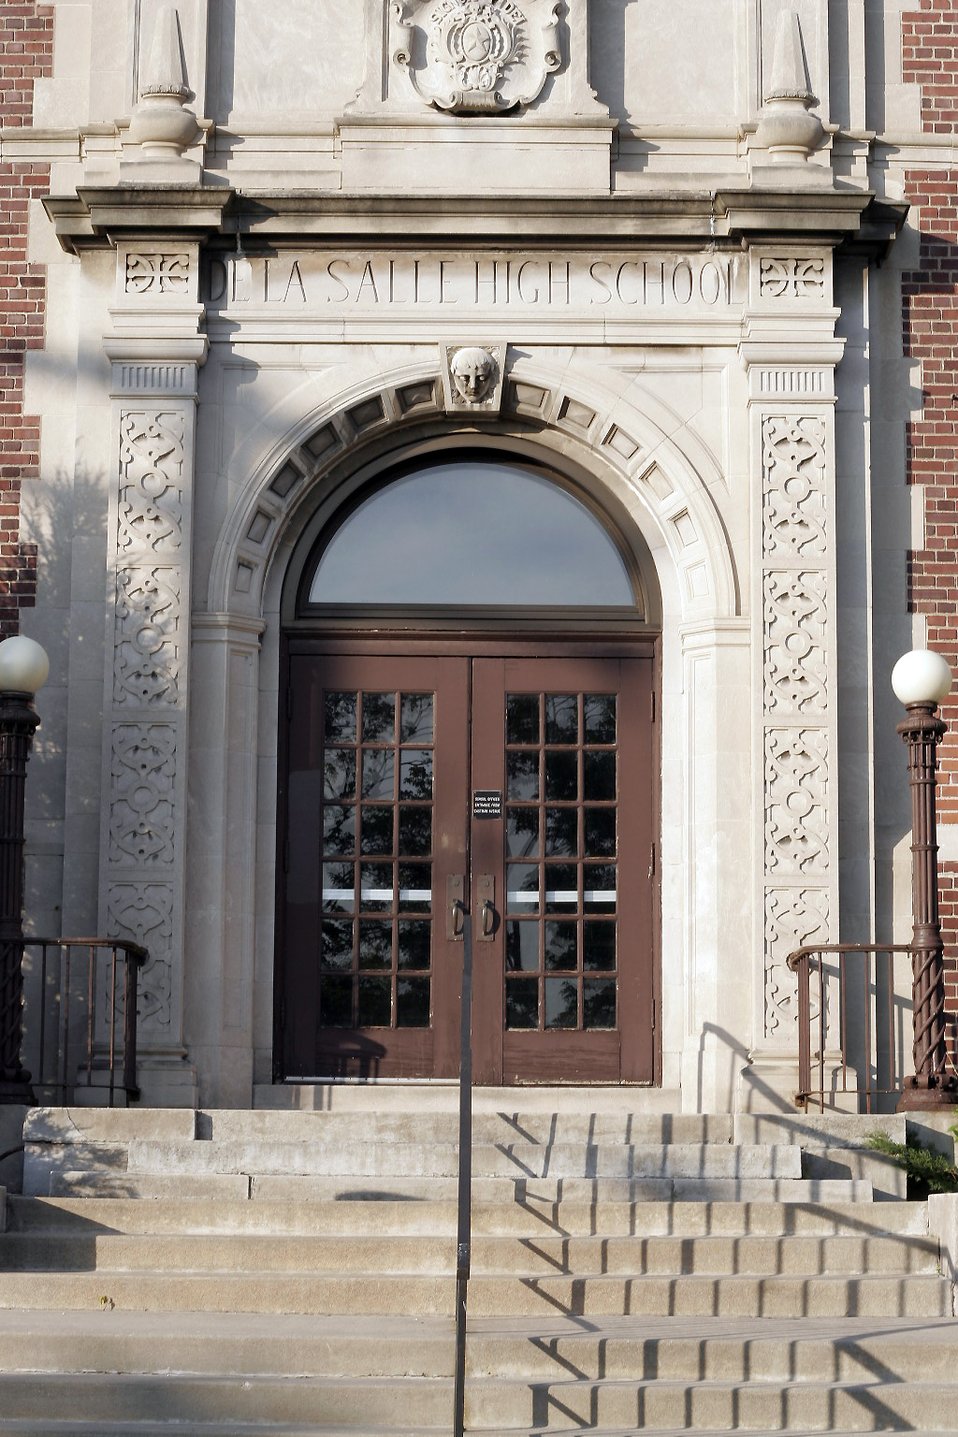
DeLaSalle High School in July 2006